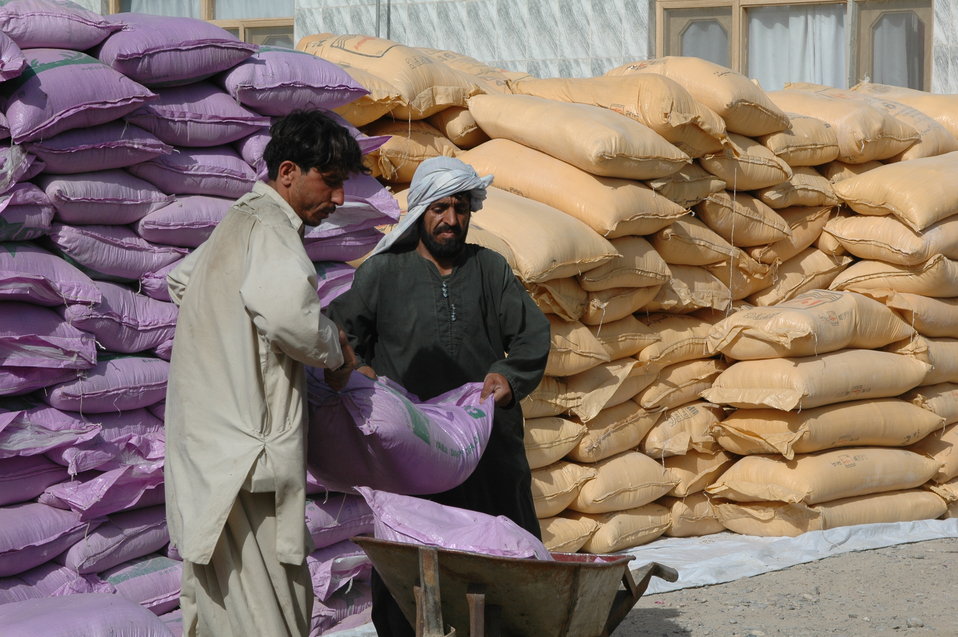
Dr Shah Visits Argandab April 10, 2010